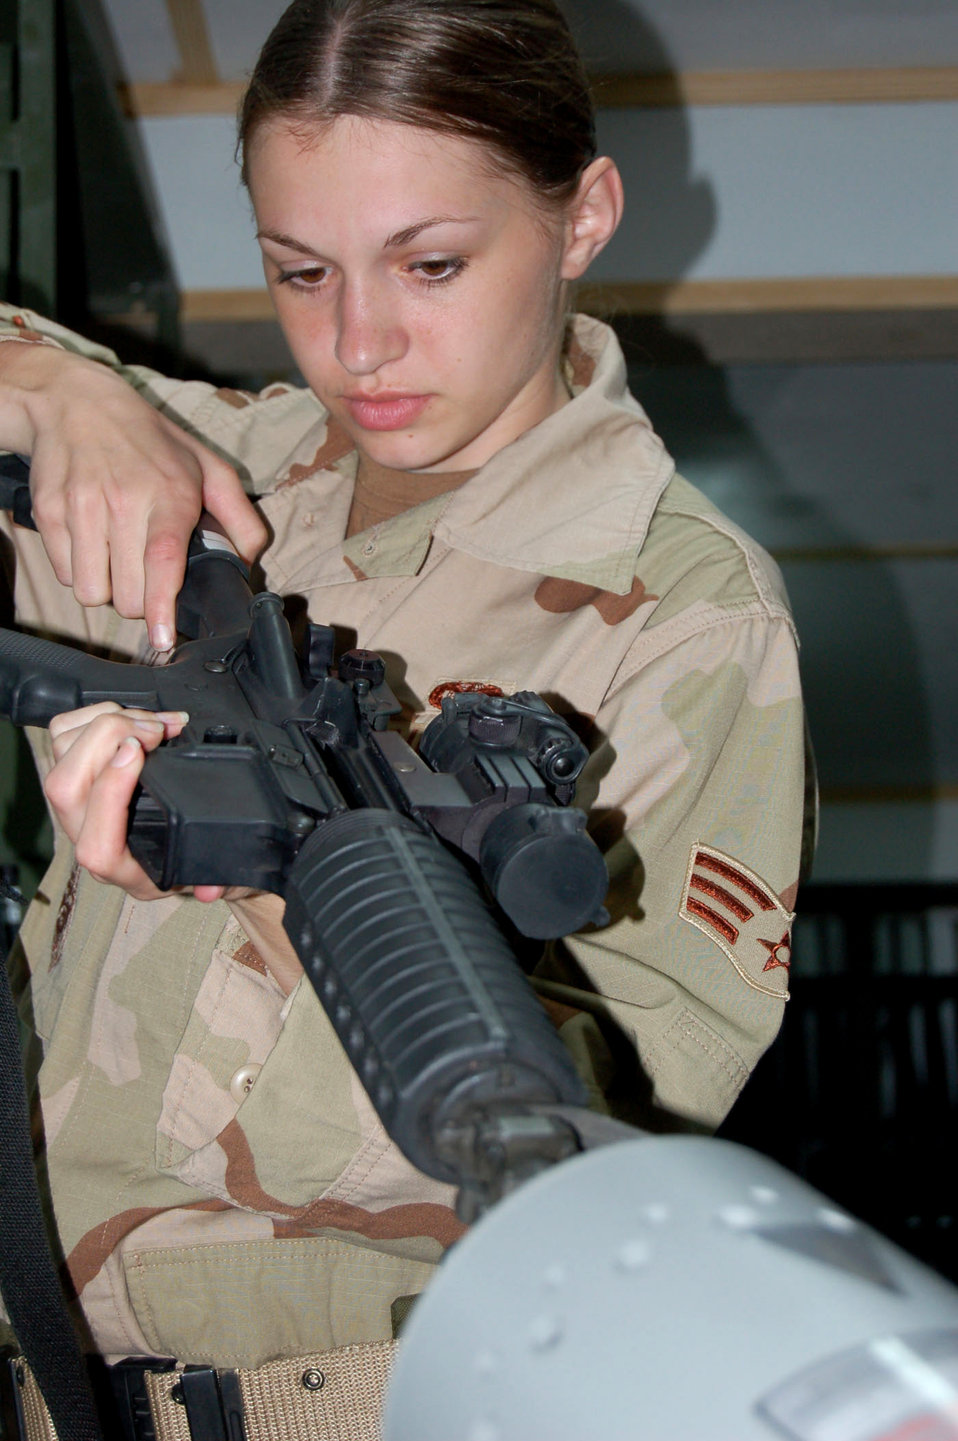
Security forces demonstrate skills

Senior Airman Jamie DiCicco clears her weapon at a clearing barrel at Manas Air Base, Kyrgyzstan, on Wednesday, April 19, 2006. She is assigned to the 376th Expeditionary Security Forces Squadron.